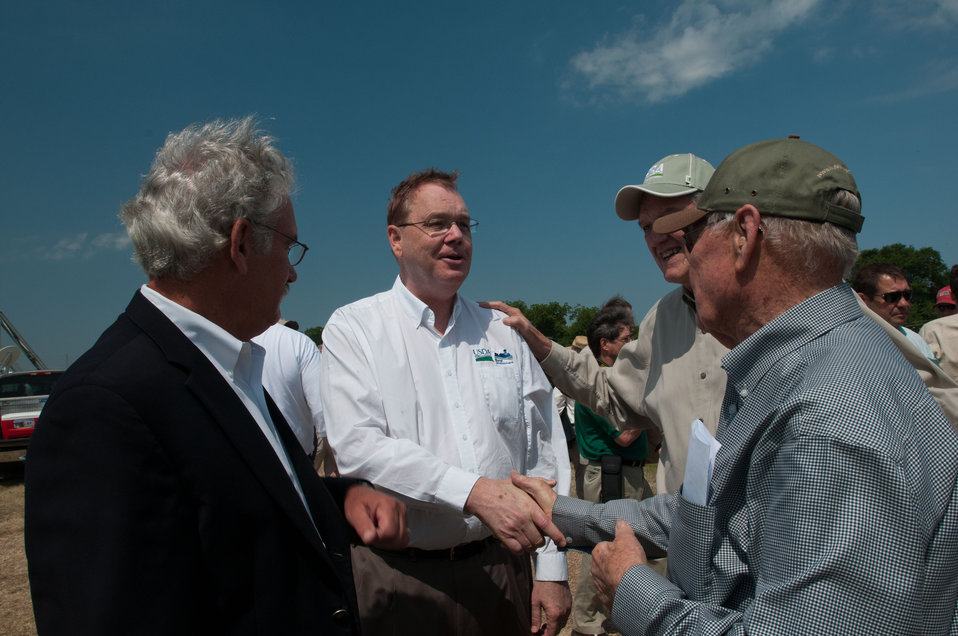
A farmer meets with U.S. Department of Agriculture Undersecretary for Rural Development Dallas Tonsager (right) and Acting Under Secretary Farm and Foreign Agriculture Service Michael Scuse (left) to thank them for coming to see the region and meet with farmers at the Mississippi River levee at Vidalia, LA, on Thursday, May 19, 2011. In the background is the Natchez–Vidalia Bridge which connects Natchez, Mississippi and Vidalia, Louisiana.